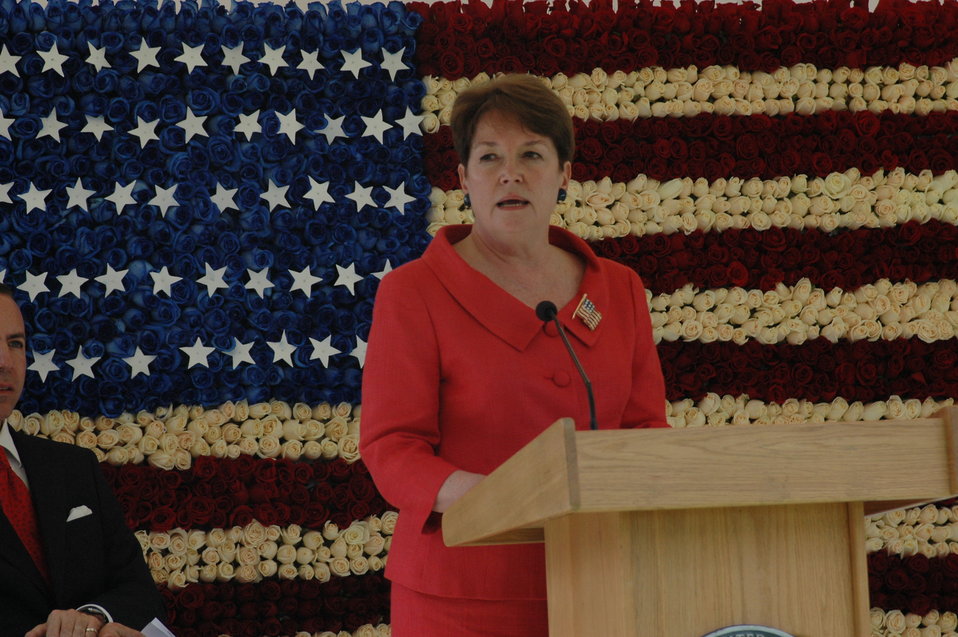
July 4th Celebration at U.S. Embassy in Ecuador

U.S. Ambassador to Ecuador Heather Hodges delivers remarks in front of an American flag made out of Ecuadorian roses at the U.S. Independence Day celebration in Quito, Ecuador, on July 2, 2010.